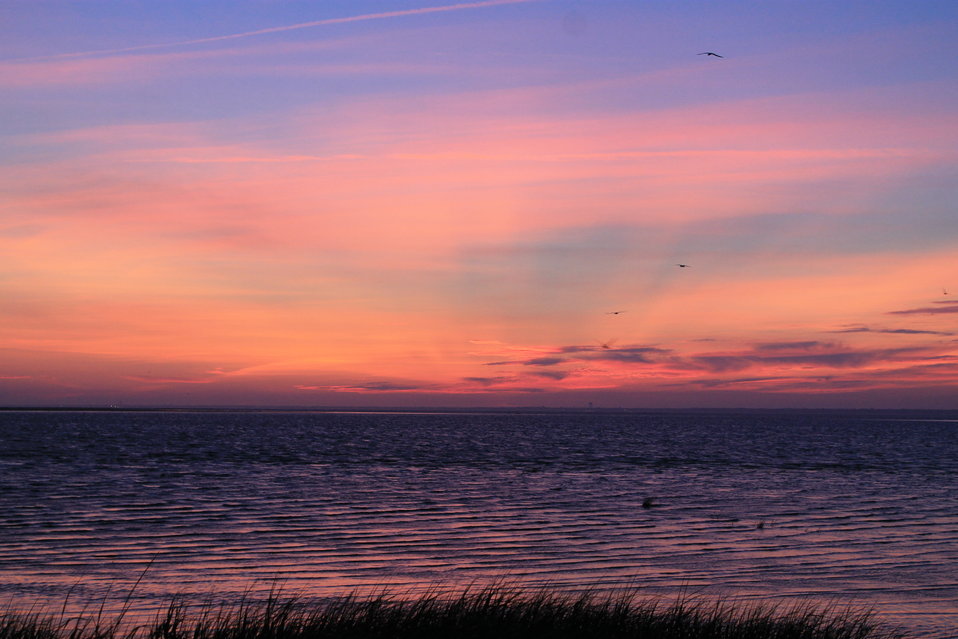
Sunset near camp

Monomoy National Wildlife Refuge, MA.